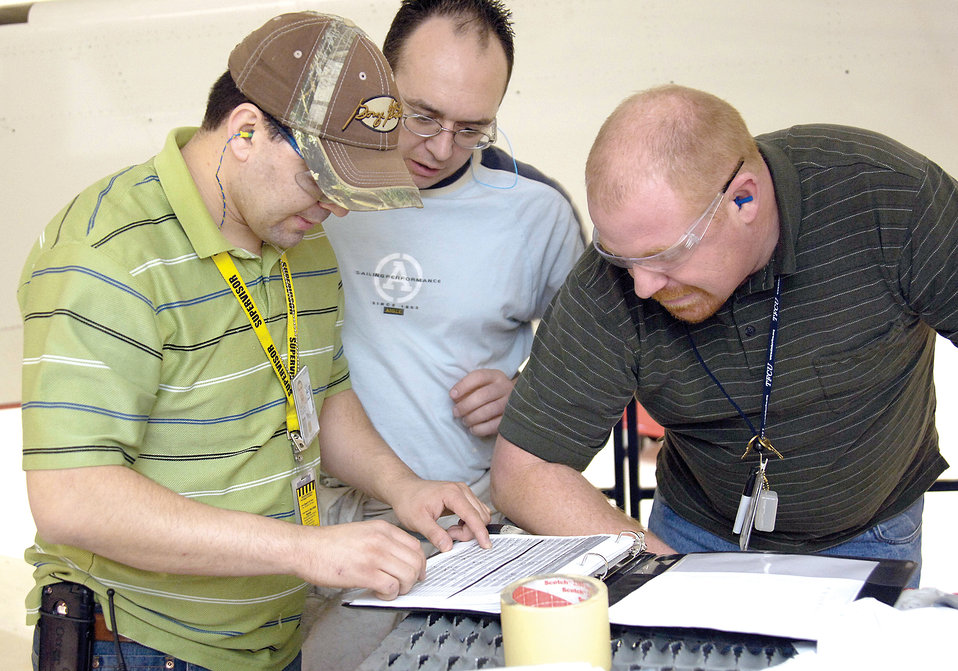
Navy E-6 service life extended

Pascual Villegas (from left) discusses aircraft work with Jonathan Robidoux and Jason